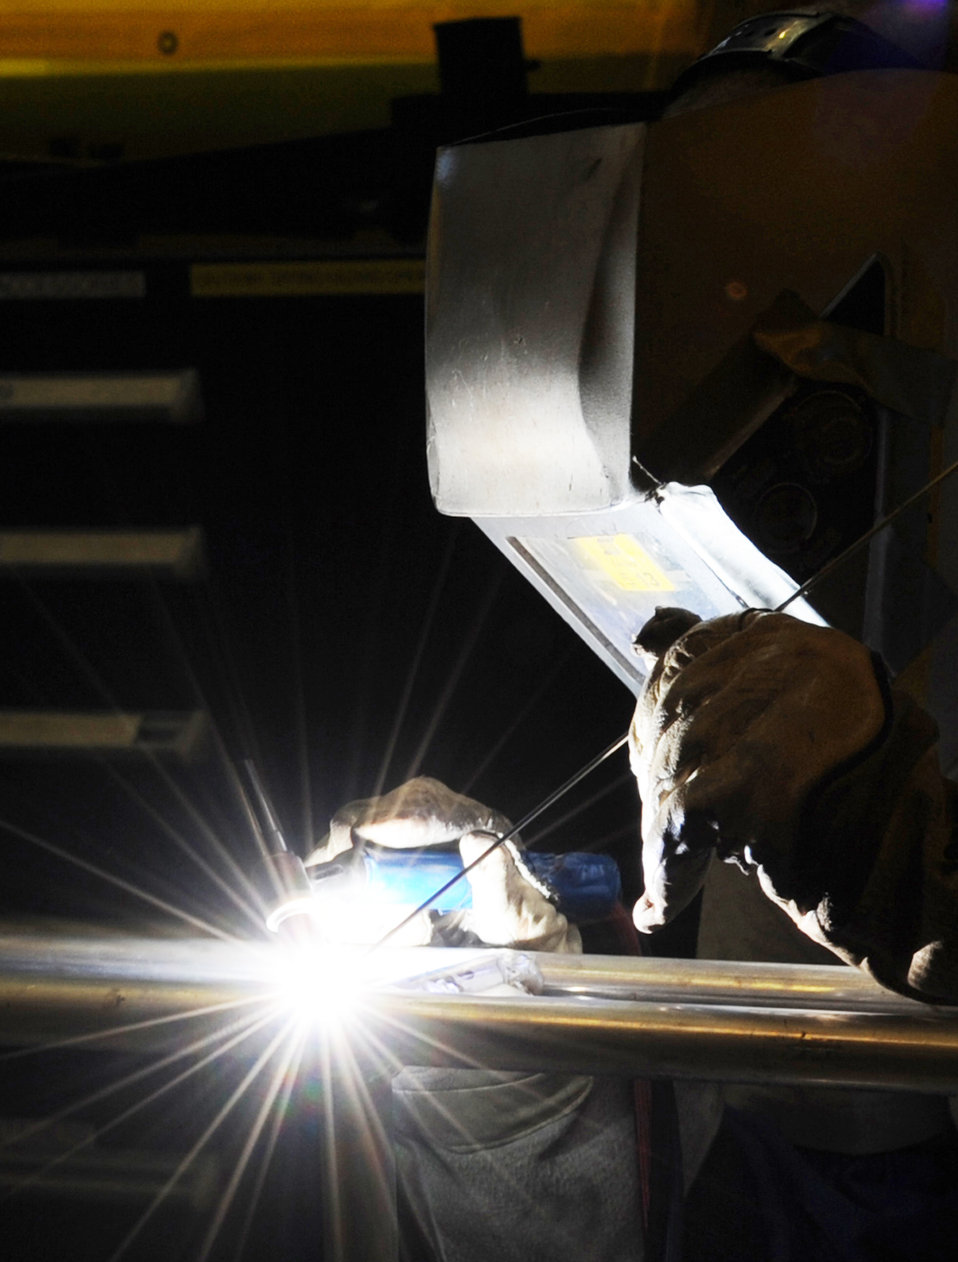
An illuminating process

Airman 1st Class Michael Prox welds a structure for a C-130J Super Hercules at Ramstein Air Base, Germany, Dec. 30, 2009. He is a metals technology fabrication journeyman with the 86th Maintenance Squadron.